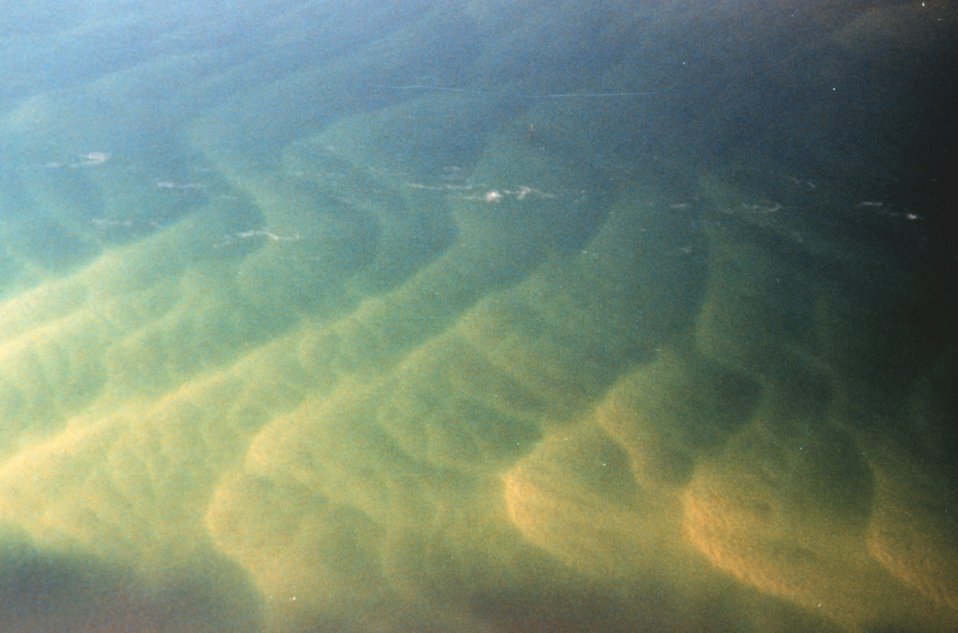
Giant sandwaves as seen from NOAA helicopter during SHOALS Lidar survey.